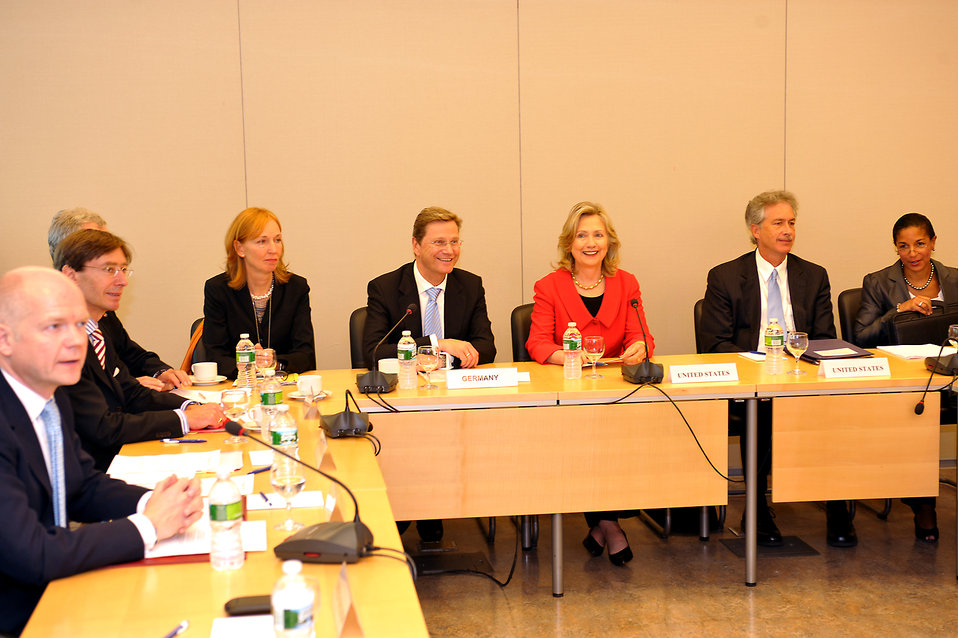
Secretary Clinton Attends the P5 Breakfast

U.S. Secretary of State Hillary Rodham Clinton attends the P5 breakfast hosted by UN Secretary General Ban Ki-Moon at the EU Delegation Office in New York, New York, on September 22, 2010. U.S. Under Secretary of State for Political Affairs William J. Burns and U.S. Permanent Representative to the United Nations Susan E. Rice are sitting to the right of the Secretary.